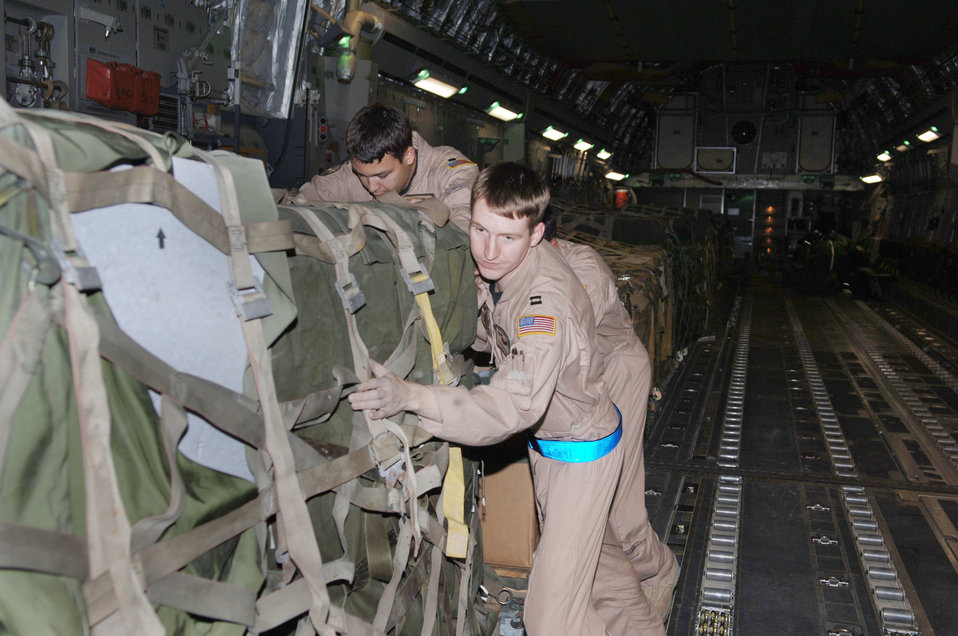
Airmen deliver first relief supplies to Pakistan

ISLAMABAD, Pakistan -- Capt. Todd Stinchfield, C-17 Globemaster III aircraft commander, helps unload a pallet of the first relief supplies from the United States here Oct. 9 less than 48 hours after the devastating earthquake that left thousands dead and thousands more injured. The cargo comprised 12 pallets of food, water, medicine and blankets and weighed almost 90,000 pounds. Two aerial port specialists from the 455th Expeditionary Logistics Readiness Squadron at Bagram Air Base, Afghanistan, were also on the flight to coordinate and manage cargo. The C-17 and its crew are from the 7th Airlift Squadron at McChord Air Force Base, Wash.